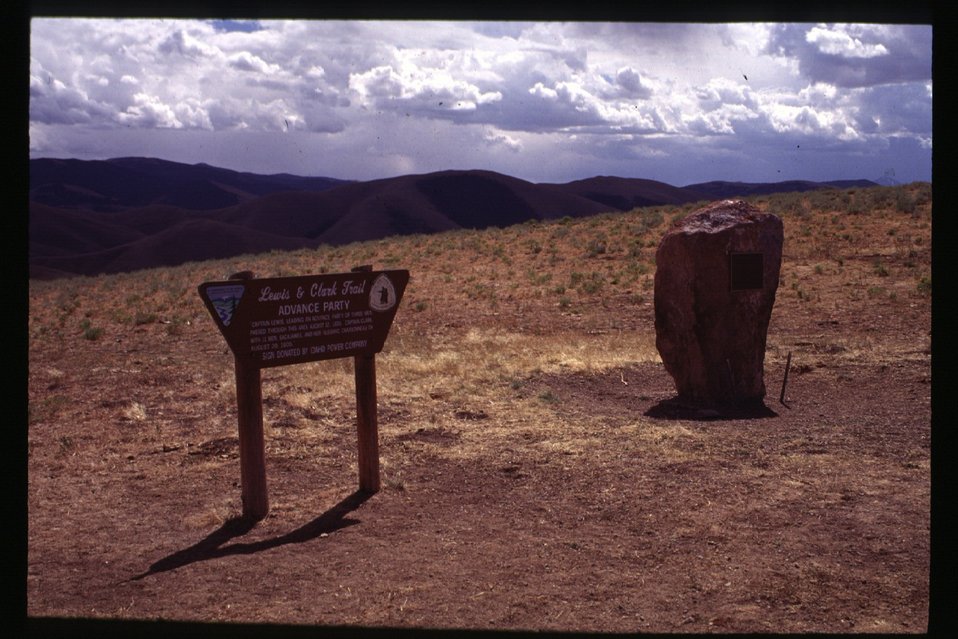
Historic Monument Lewis and Clark National Historic Trail Salmon Field Office UCSC Upper Columbia Salmon Clearwater